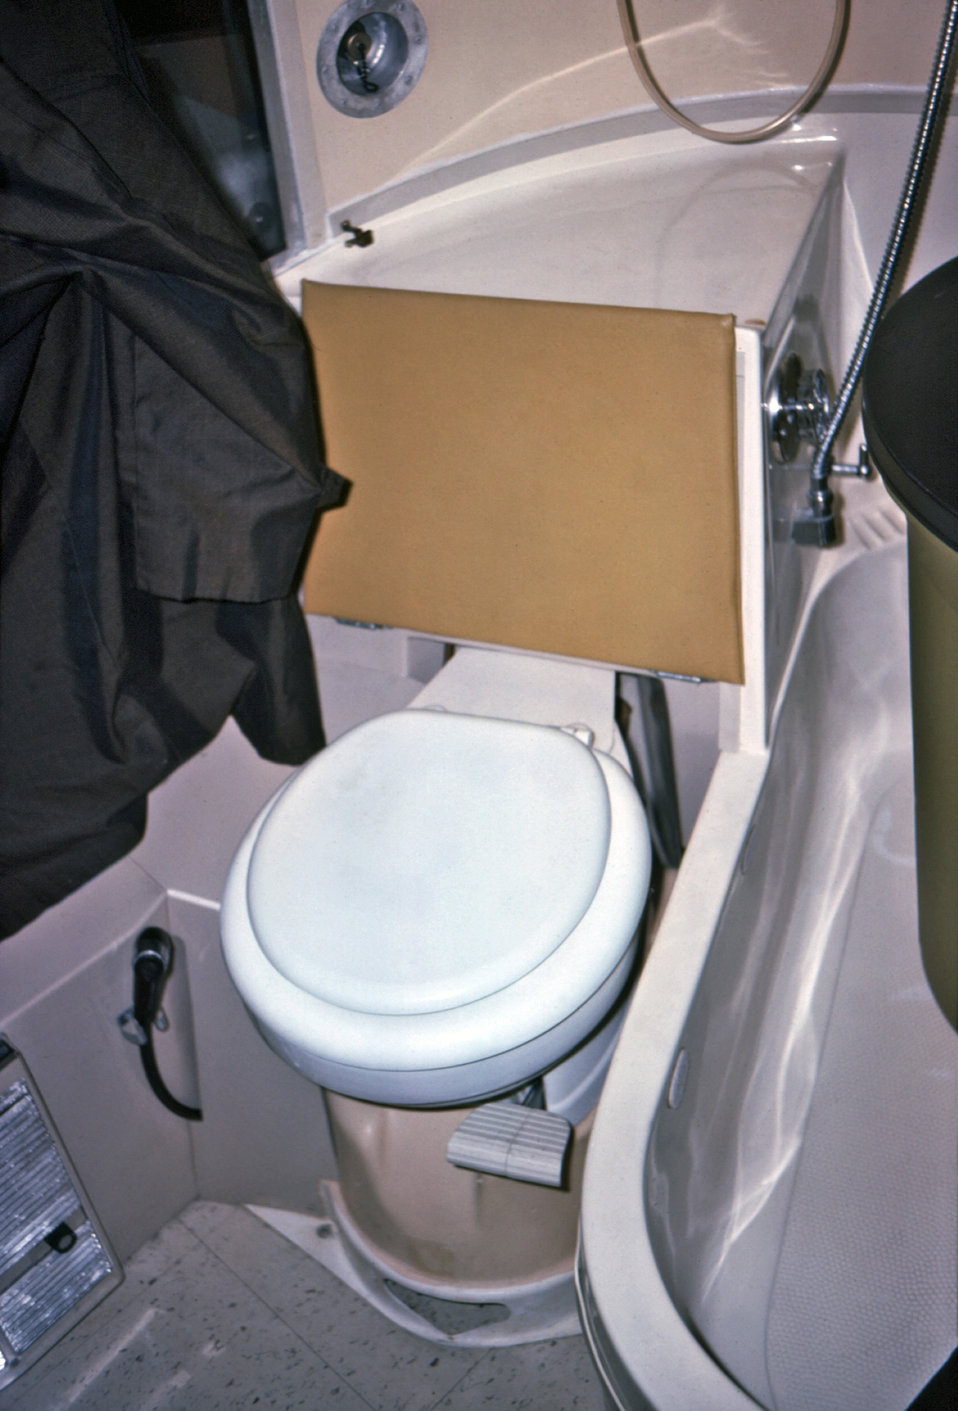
Shown here was the bathroom toilet and tub located within a mobile quarantine facility (MQF), which was photographed during a 1976 simulated medical quarantine exercise.